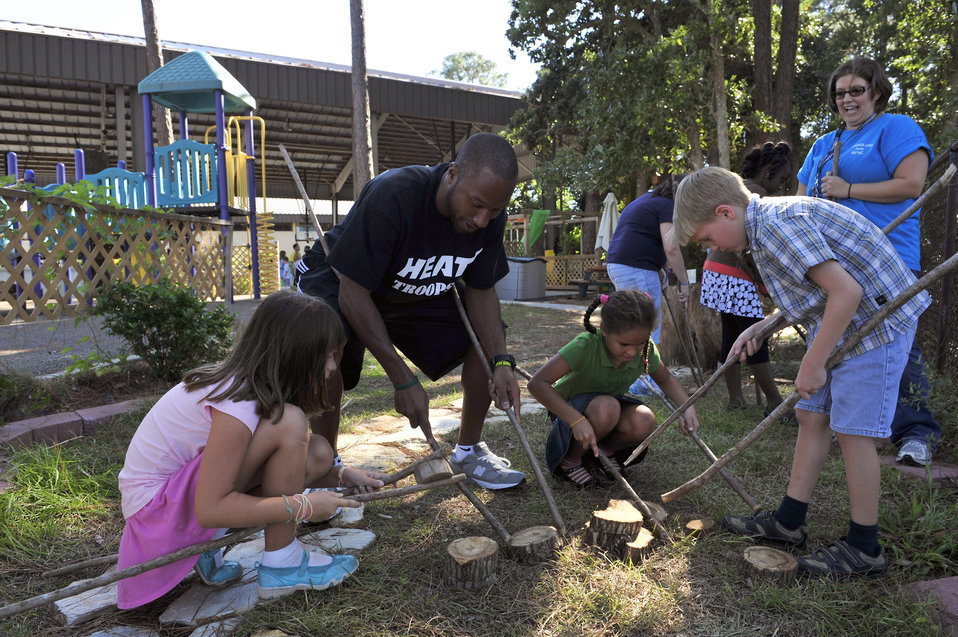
Nature-deficit disorder

Kenny Hasbrouck works on a team building activity with children at the outdoor classroom at the youth center Sept. 30, 2010, at Hurlburt Field Fla. In November 2009 the classroom became the 29th Arbor Day Foundation and Dimensions Educational Research Foundation-certified Nature Explore classroom in the country. Mr. Hasbouck is player for the NBA's Miami HEAT.